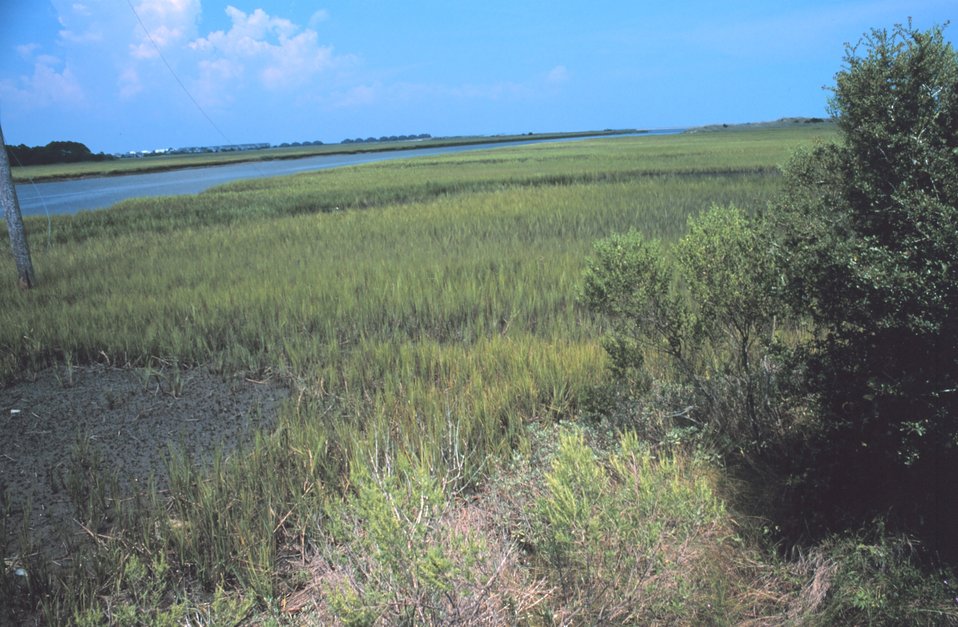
Tidal wetlands along Johnson Creek